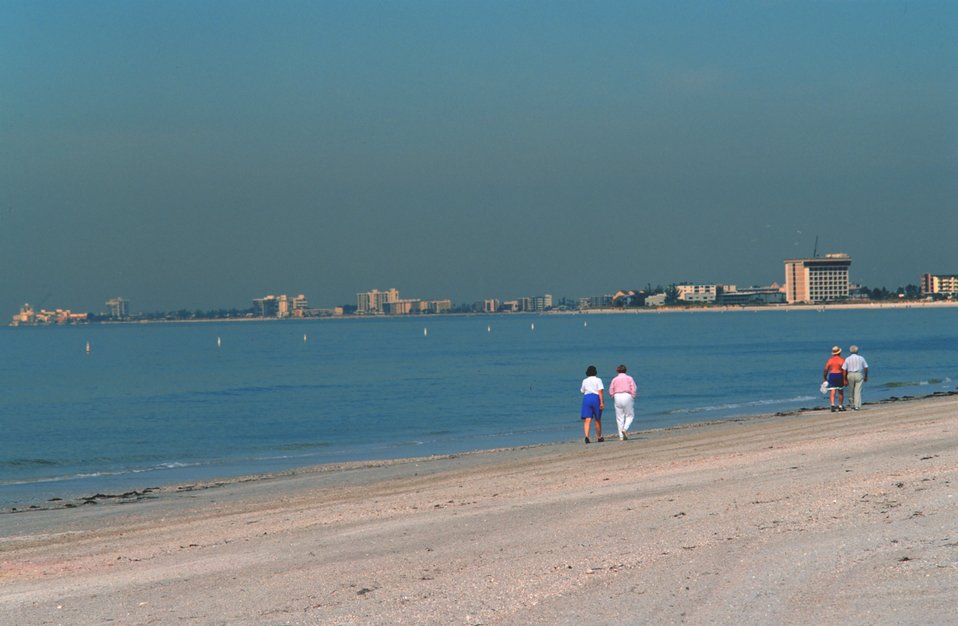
Strolling along the beach looking for the random treasure